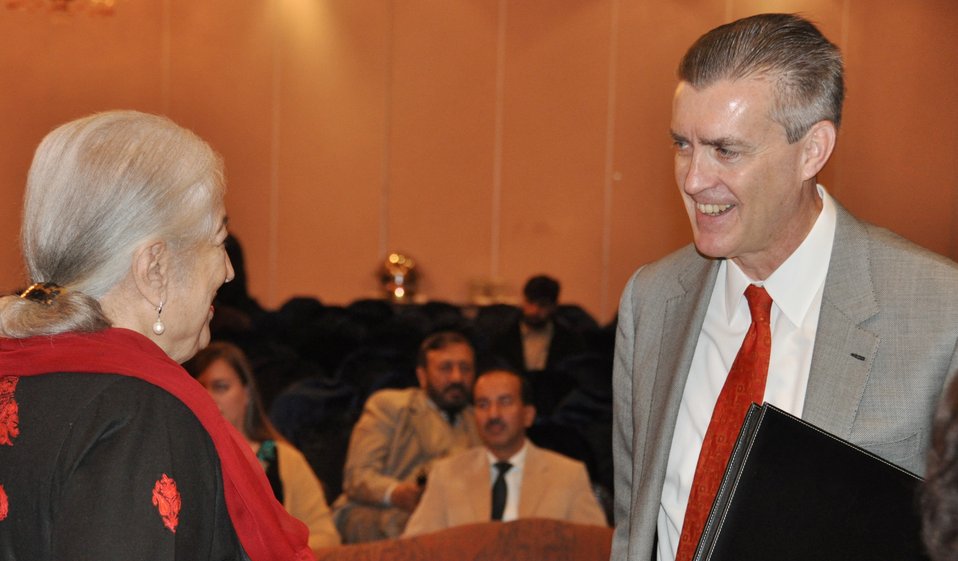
PHDS Launch

The PDHS 2012-13 survey was jointly implemented by the Government of Pakistan’s Ministry of National Health Services, Regulation and Coordination and the United States Government through the United States Agency for International Development (USAID). Data for this survey was collected from a nationally representative sample of nearly 13,000 households, and more than 15,000 women and 3,000 men between the ages of 15 and 49 years were interviewed.